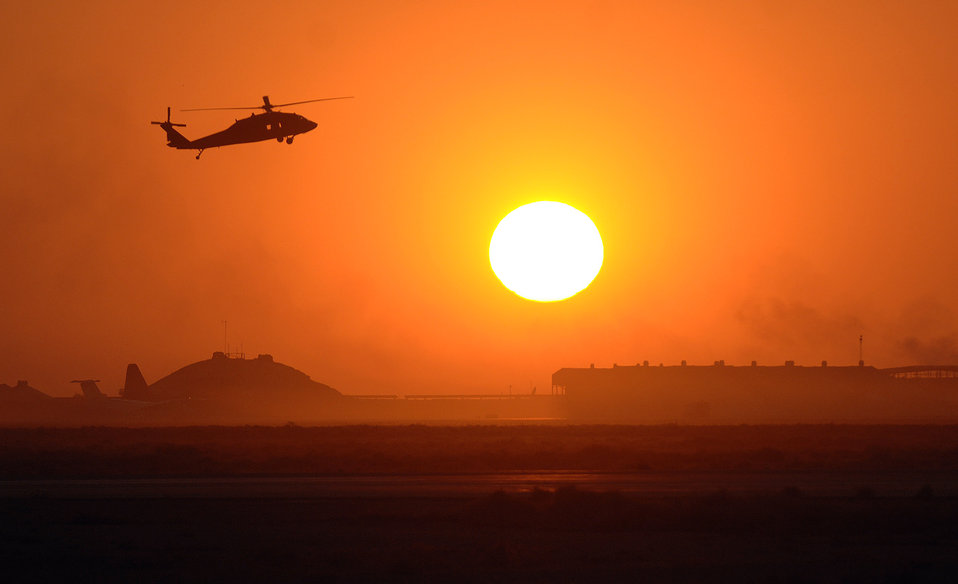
Blackhawk over Balad

An Army Blackhawk helicopter touches down near the Balad Air Base runway in the final minutes of sunlight delivered by a setting Iraqi sunset.